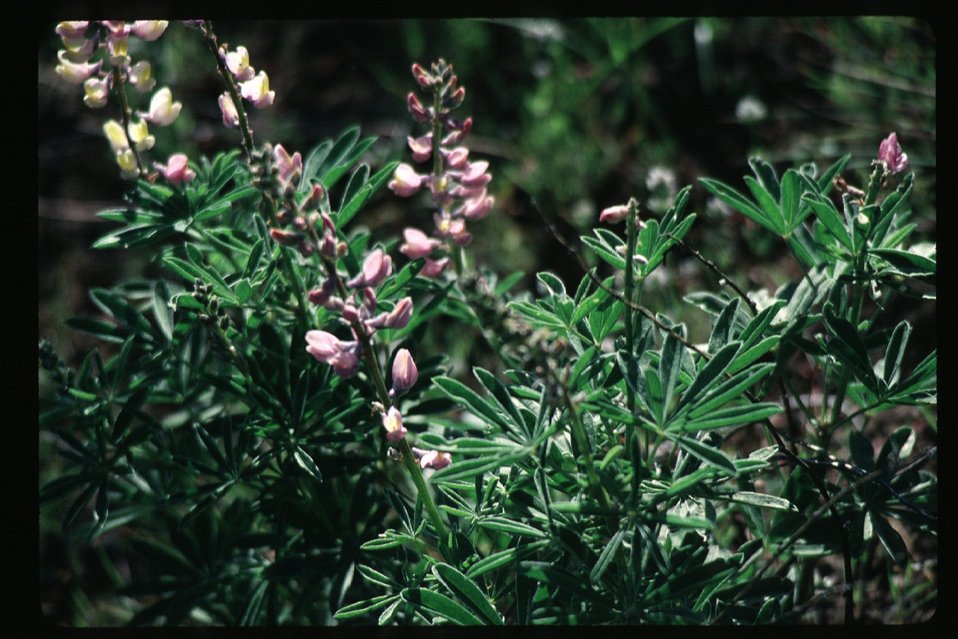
Lupin Scenic Wildflowers Vegetation Grass and brush USRD Upper Snake River District